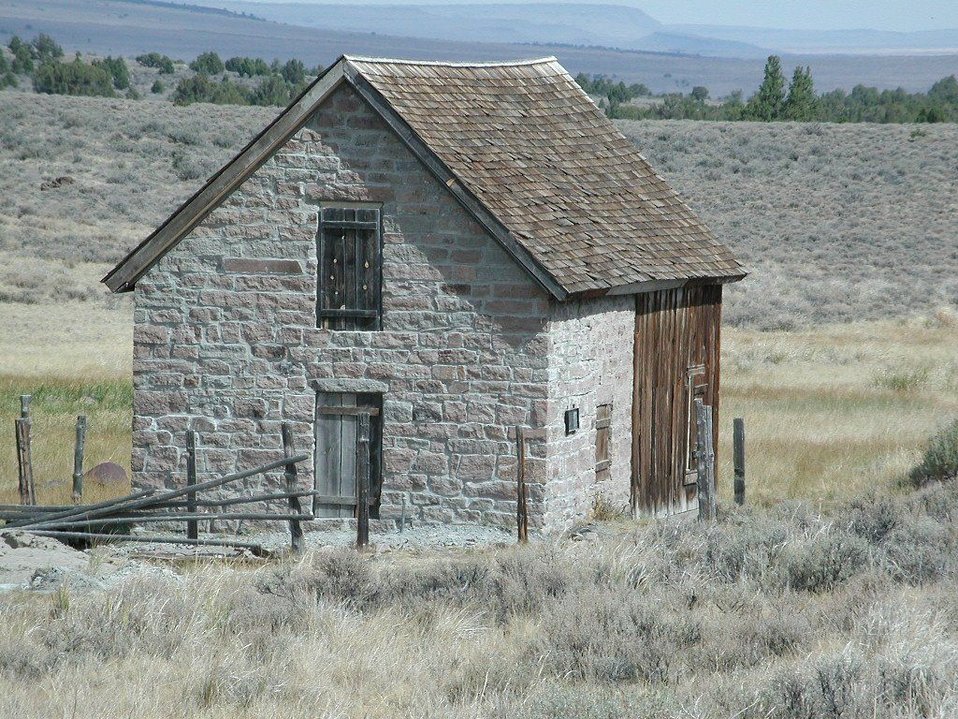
Last Chance Ranch, Nevada

Shown after stabilization by the U.S. Fish and Wildlife Service in 2000 and 2001. Historic homestead is located on what is now Sheldon National Wildlife Refuge.